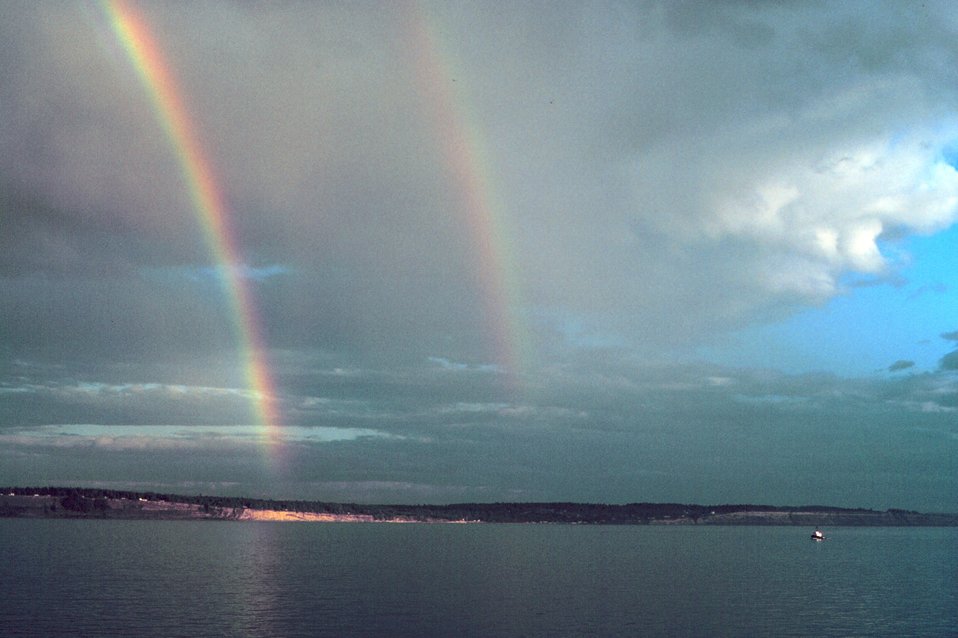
A spectacular double rainbow.